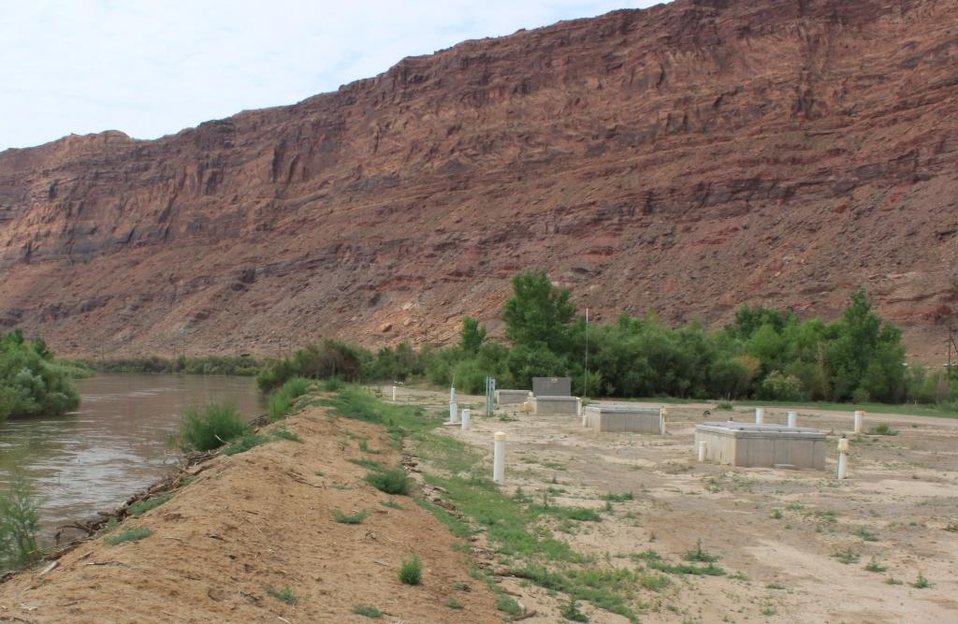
Moab Mill Tailings Removal Project Makes Progress in Utah

A view of wells closest to the Colorado River used for injection of freshwater.

Freshwater (diverted river water) was injected in wells close to the river to create an underground “mound” of water that changes the flow of groundwater, thus providing a temporary barrier to contaminants reaching the river.